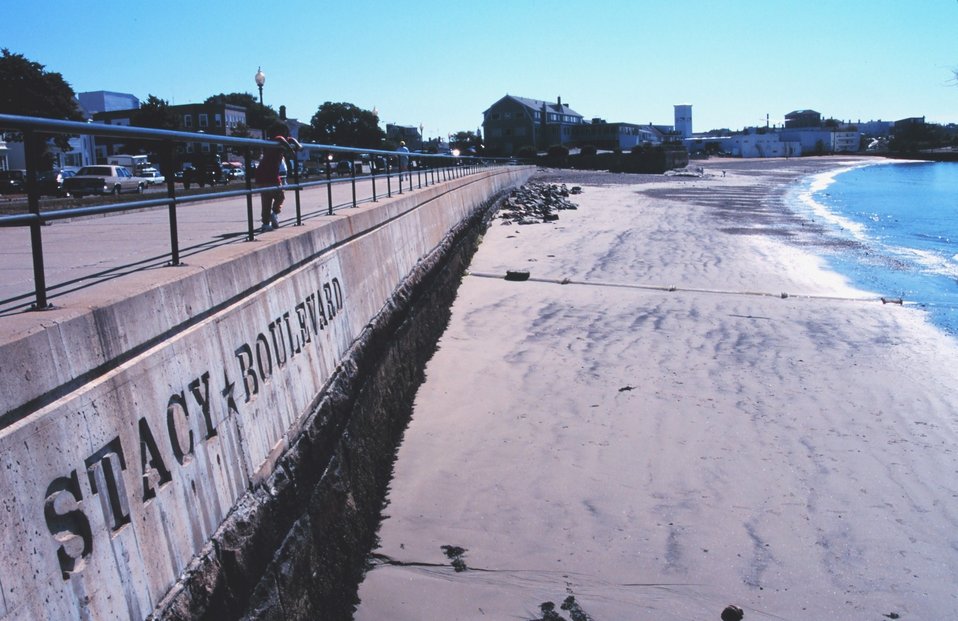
The shore at Stacy Boulevard.